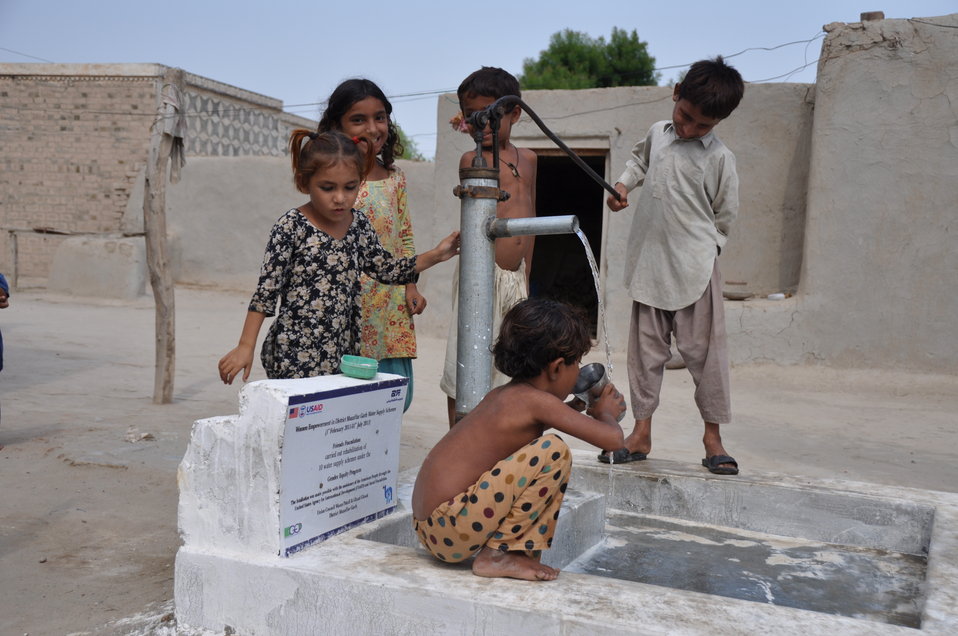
USAID Gender Equity Program